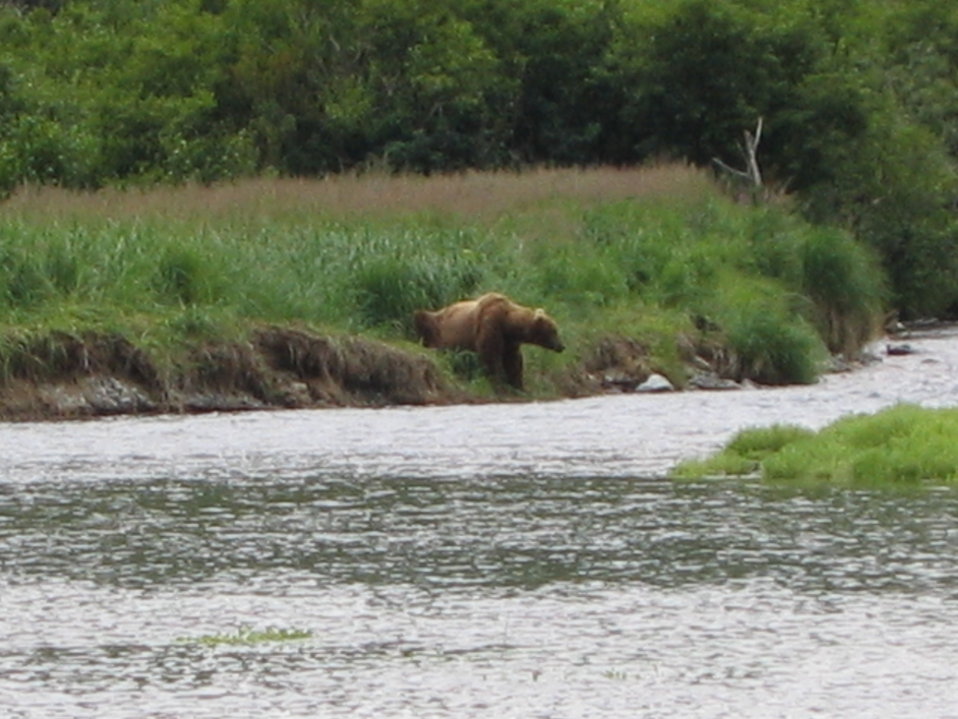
Large Alaska Brown Bear (Ursus arctos) waiting for dinner to swim by.